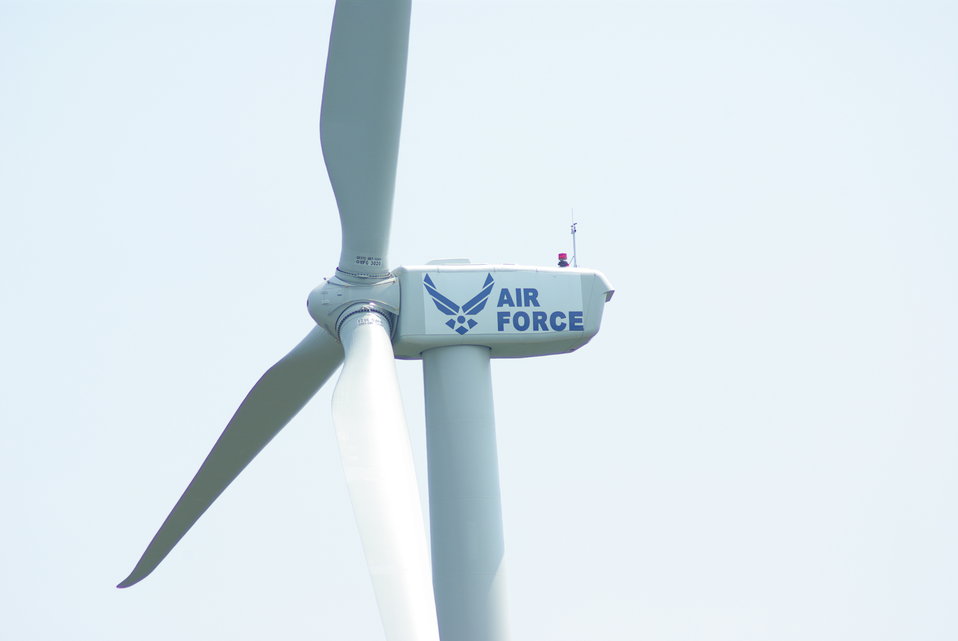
New wind turbines help Air Force go green

A close-up view of one of the Air Force's two new wind turbines
at the Massachusetts Military Reservation in Cape Cod, Mass. The 1.5
megawatt wind turbines, in addition to an existing turbine, were built to
offset electrical costs for powering numerous groundwater cleanup systems at
the reservation. The turbines will pay for all the Air Force's electric
needs for groundwater remediation at MMR, saving more than $1.5 million per
year. They will also offset emissions generated by fossil-fueled power
plants, reducing the Air Force's carbon footprint.